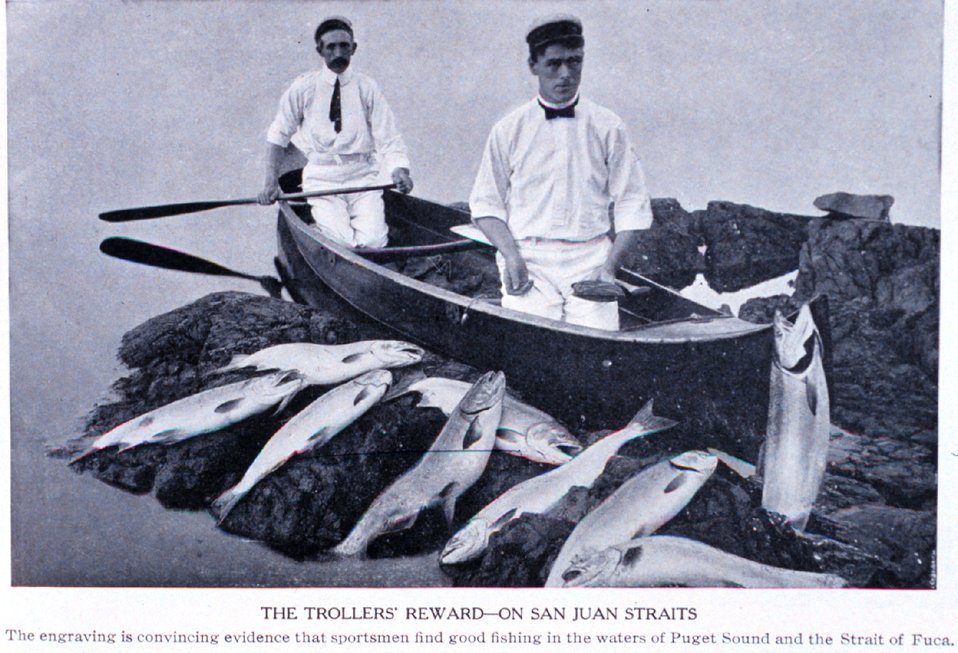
'The Trollers Reward - on San Juan Straits'. In: 'Puget Sound and Western Washington Cities-Towns Scenery', by Robert A. Reid, Robert A. Reid Publisher, Seattle, 1912. P. 133.